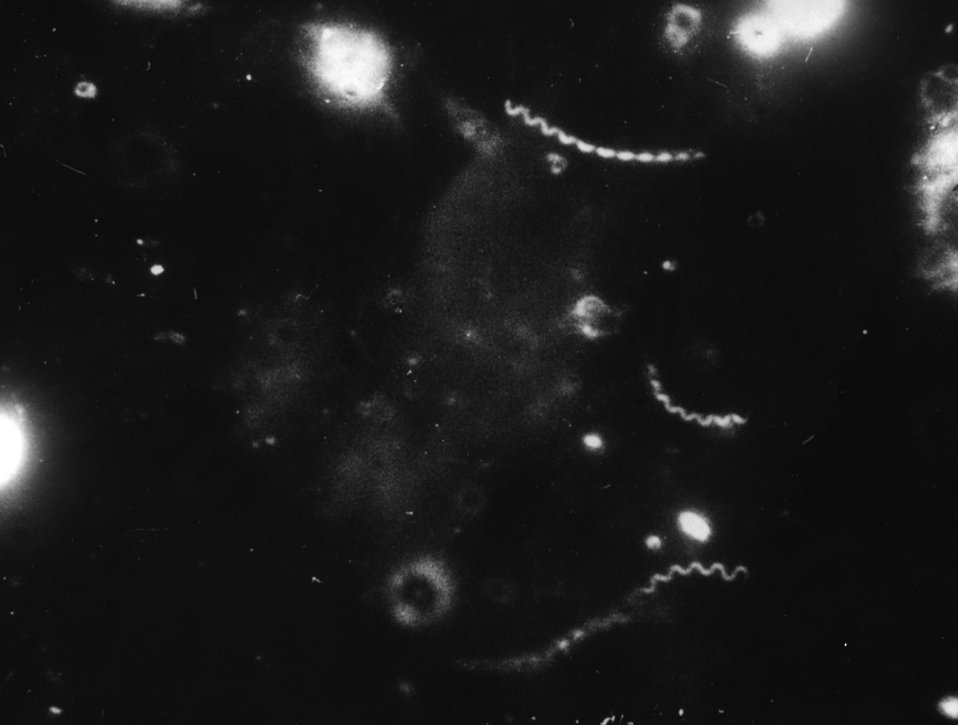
Treponema pallidum, darkfield preparation.